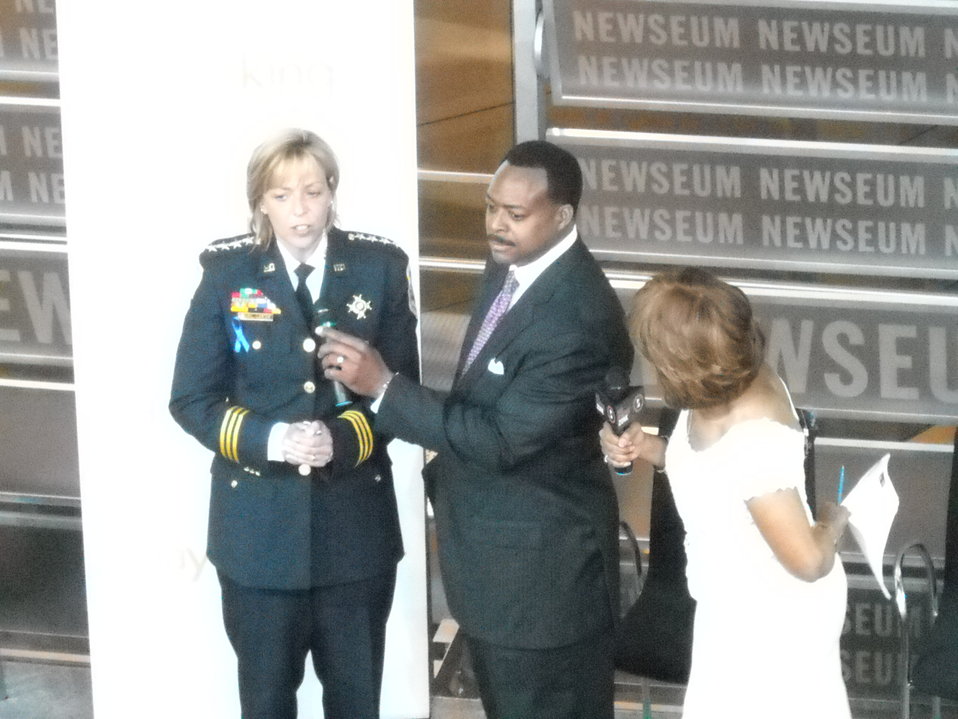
National No Phone Zone Day Newsum Washington, DC April 30, 2010 048